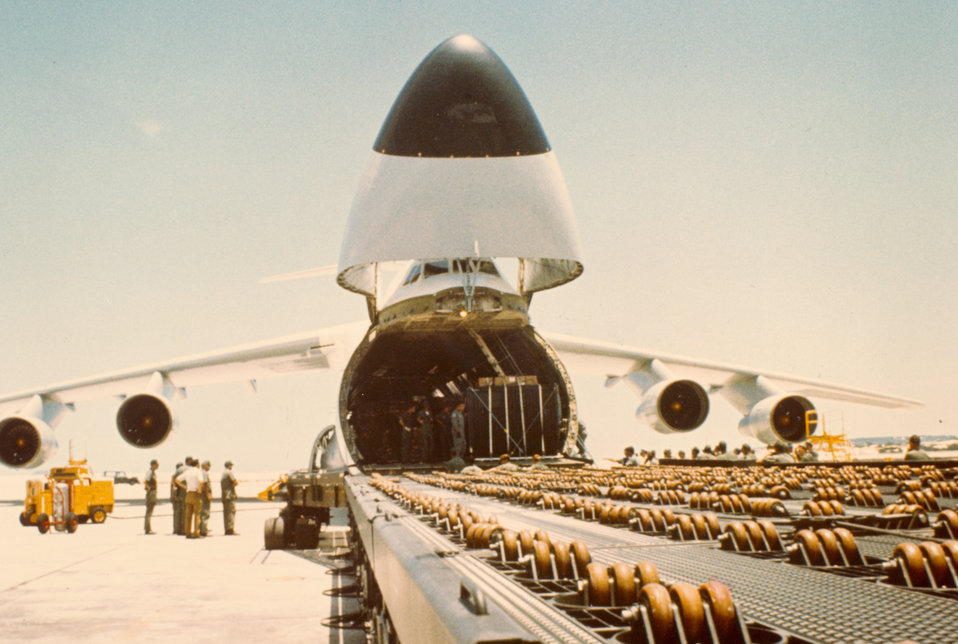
C-5 Galaxy

1970's -- Front view of a C-5 Galaxy, visor raised, ready to receive cargo at Cam Rahn Bay Air Base, South Vietnam, September 1970.